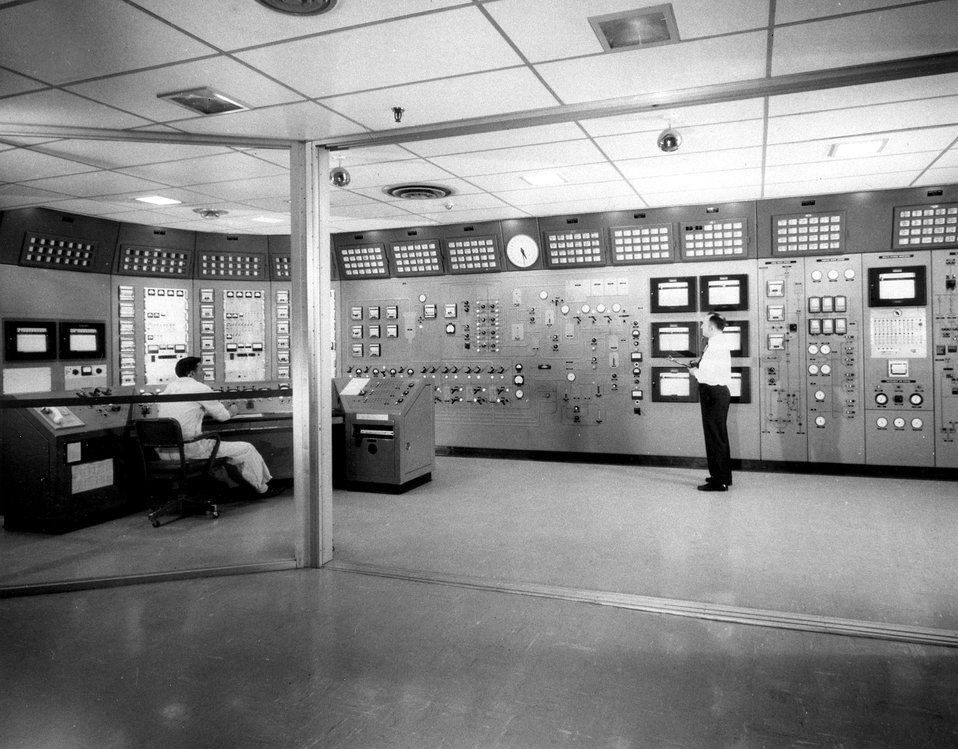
All operations of the High Flux Isotope Reactor at the AEC's Oak Ridge National Laboratory are monitored from this instrument-packed control room. c. 1968